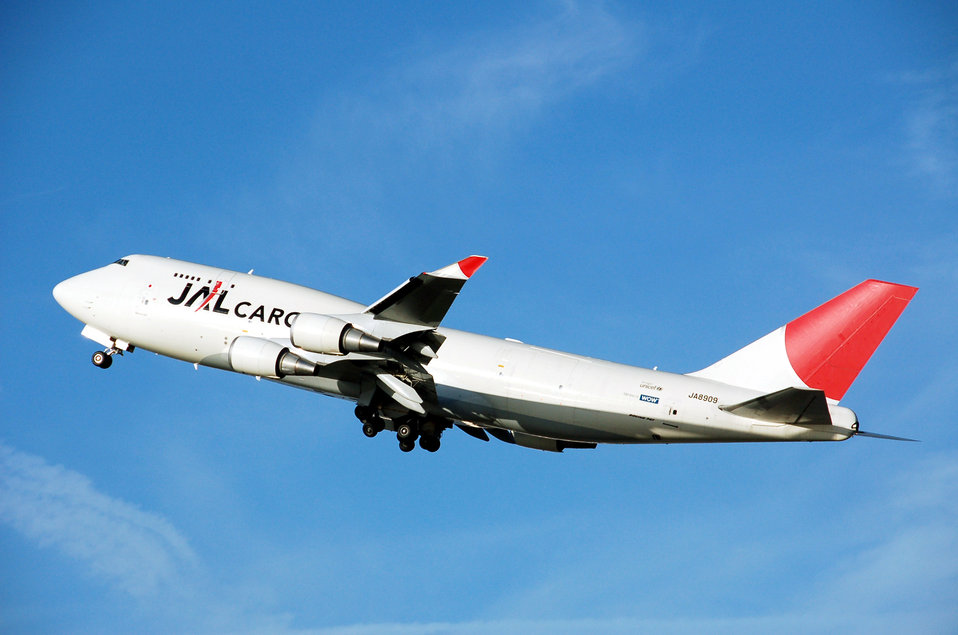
Jal.cargo.b747-400.ja8909.arp